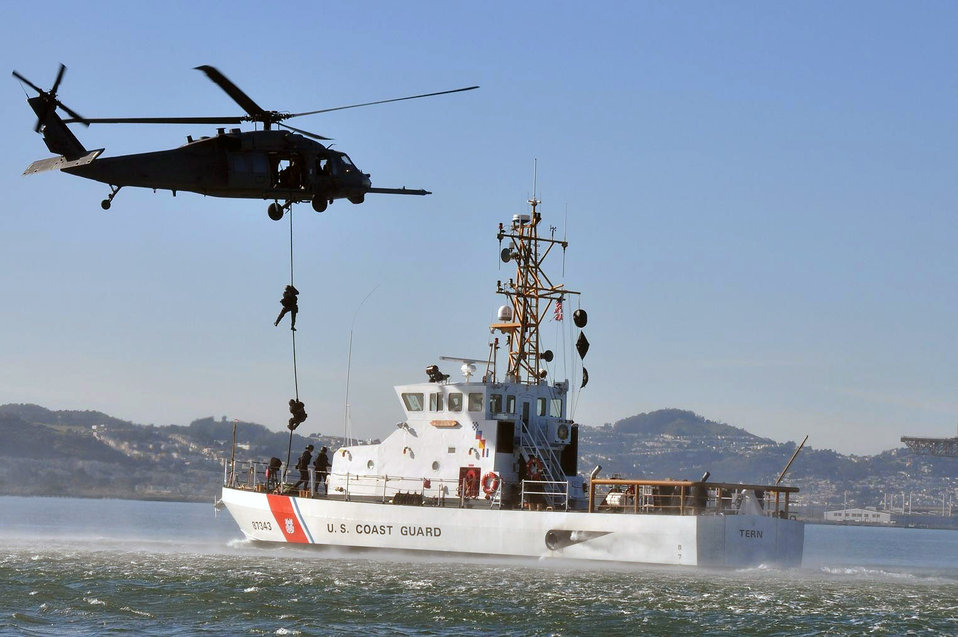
Helicopter crew rescues downed pilot

During a training exercise Jan. 29, members of the U.S. Coast Guard Maritime Safety and Security Team 91105 descend from an Air Force HH-60G Pave Hawk from the California Air National Guard's 129th Rescue Wing at Moffett Federal Airfield, Calif., onto the Coast Guard cutter Tern in the San Francisco Bay. Crewmembers conducted vertical insertion training, a fast-paced technique used to effectively deploy law enforcement teams to a high-risk situation. Shortly after the training was completed, the 129th RQW and Coast Guard crews rescued a downed pilot near Pillar Point, Calif.